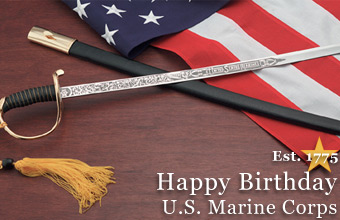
Marine Corps Birthday

The U.S. Marine Corps celebrates its 231st birthday, Nov. 10, 2006.